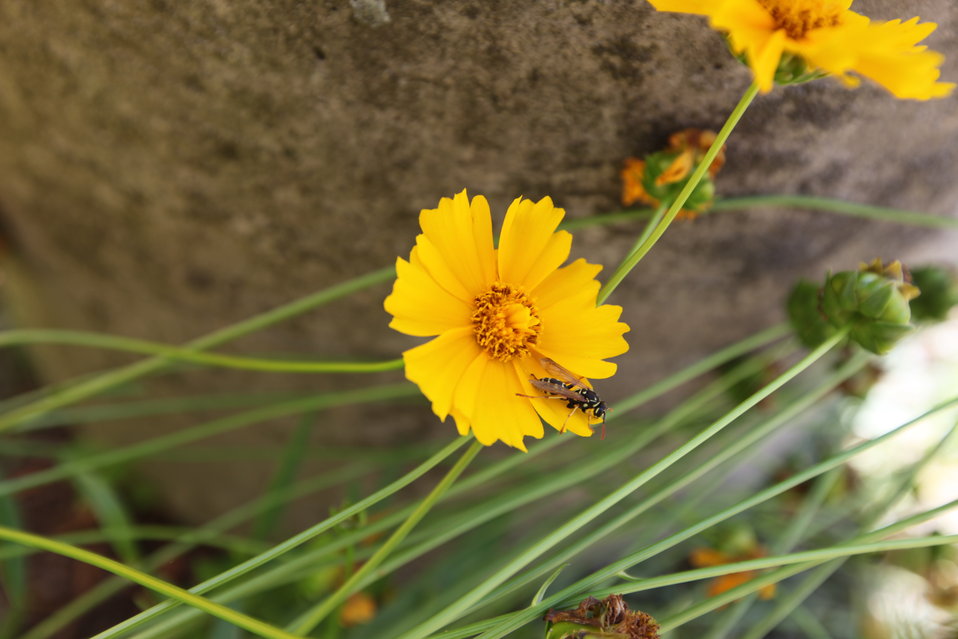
Flower With Pollinator

Northeast Regional Office Pollinator Garden, Hadley, MA.